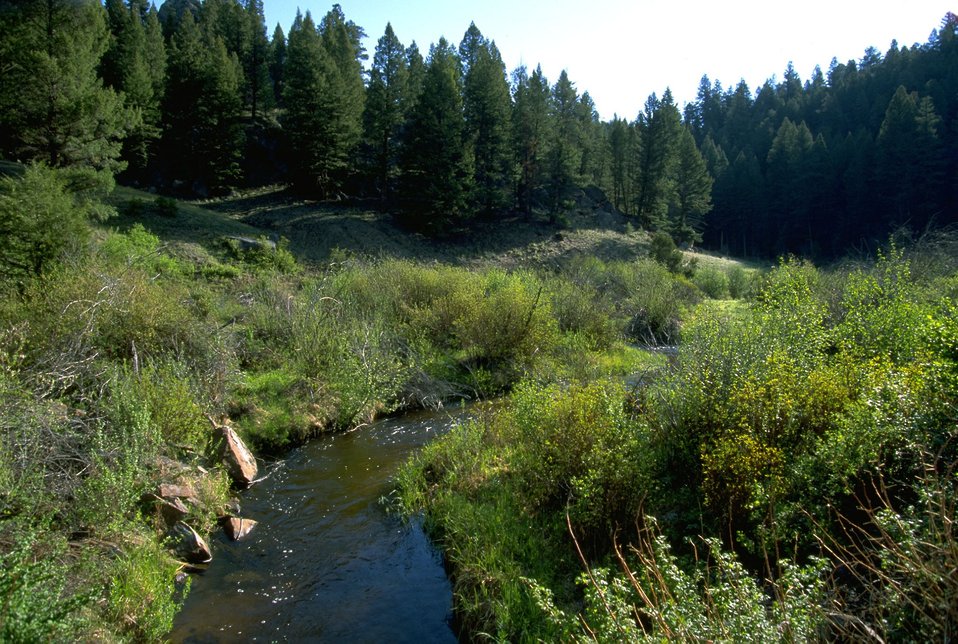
Moose Creek flowing among the foliage in the Humbug Spires Wilderness Study Area